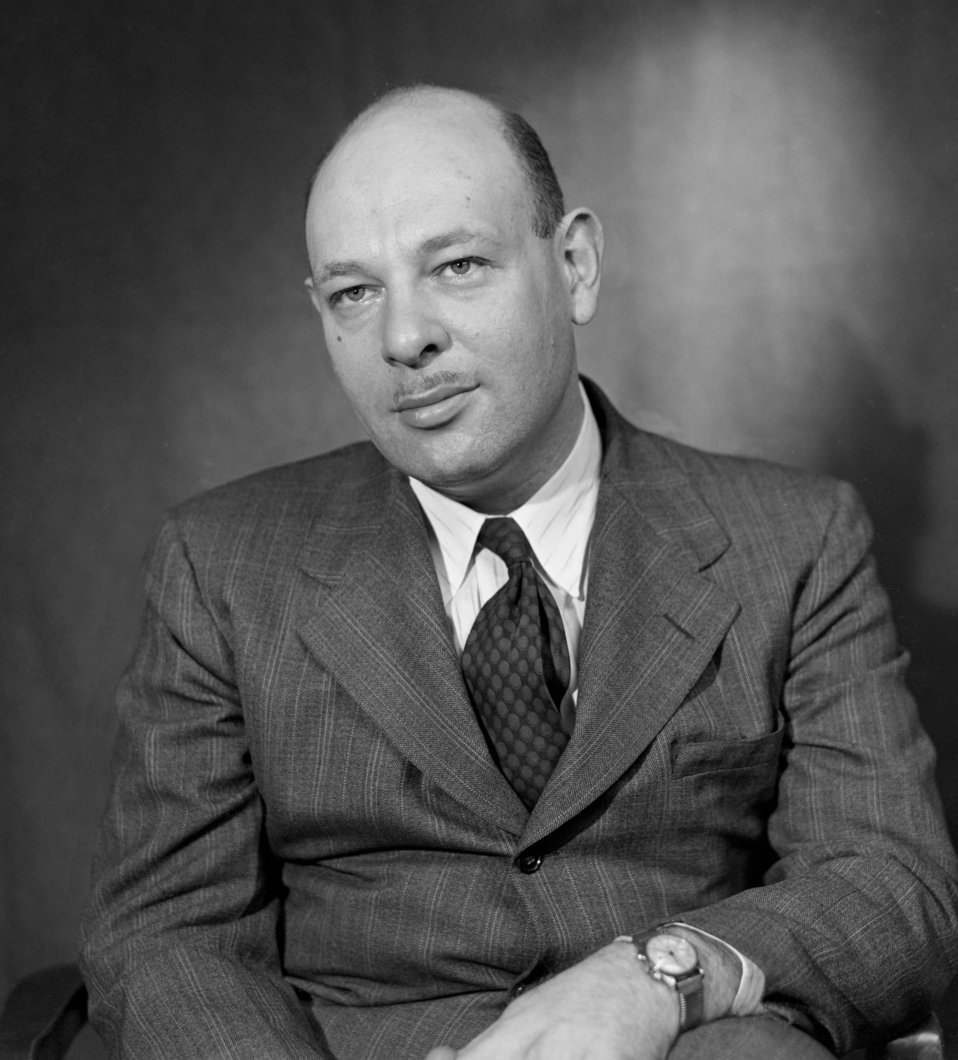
M. Abromavitz Oak Ridge 1947

3315-4 DOE photo Ed Westcott 2-24-1947 Oak Ridge Tennessee